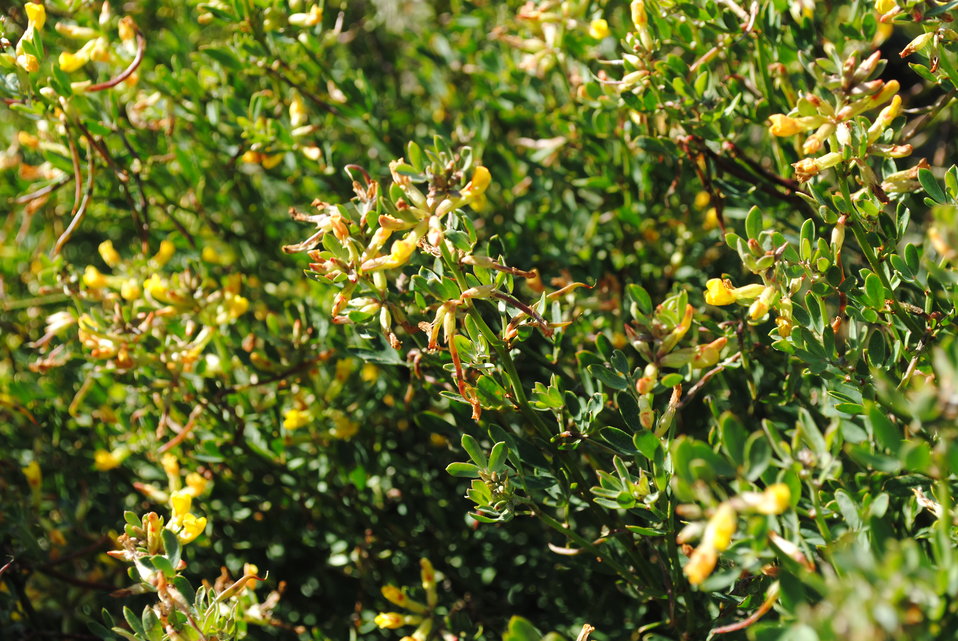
San Clemente Island lotus (Acmispon dendroideus var. traskiae) is endemic to San Clemente Island, the southernmost of eight Channel Islands off the southern California coast. The federally endangered plant is typically less than 4 ft. tall and has bushy habit and elongated fruits. It has slender erect green branches with each leaf having three to five leaflets. It also has small yellow flowers that are arranged in one to five flowered clusters.